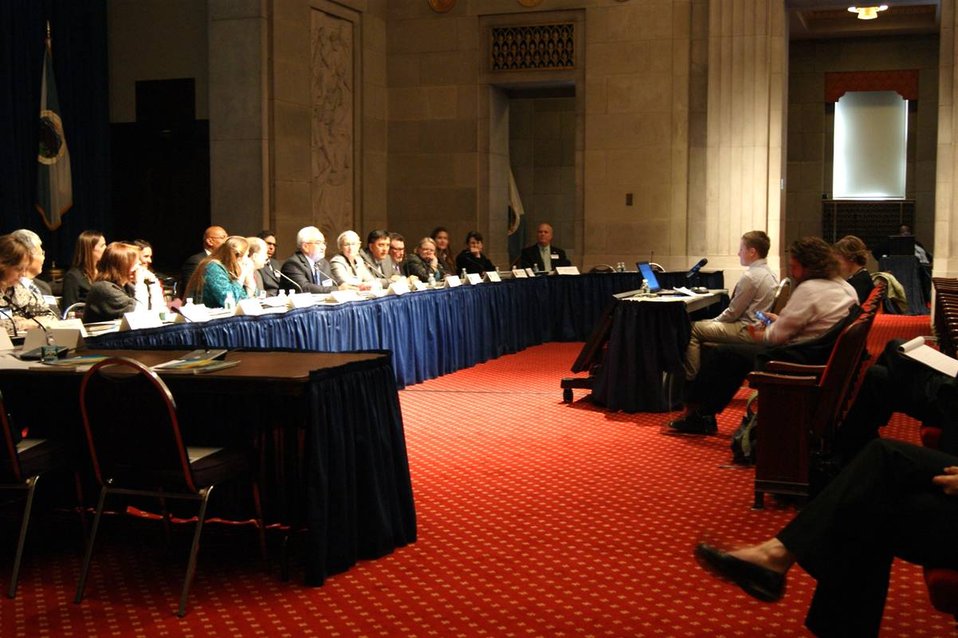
Coral Reef Task Force - Winter Meeting 2012